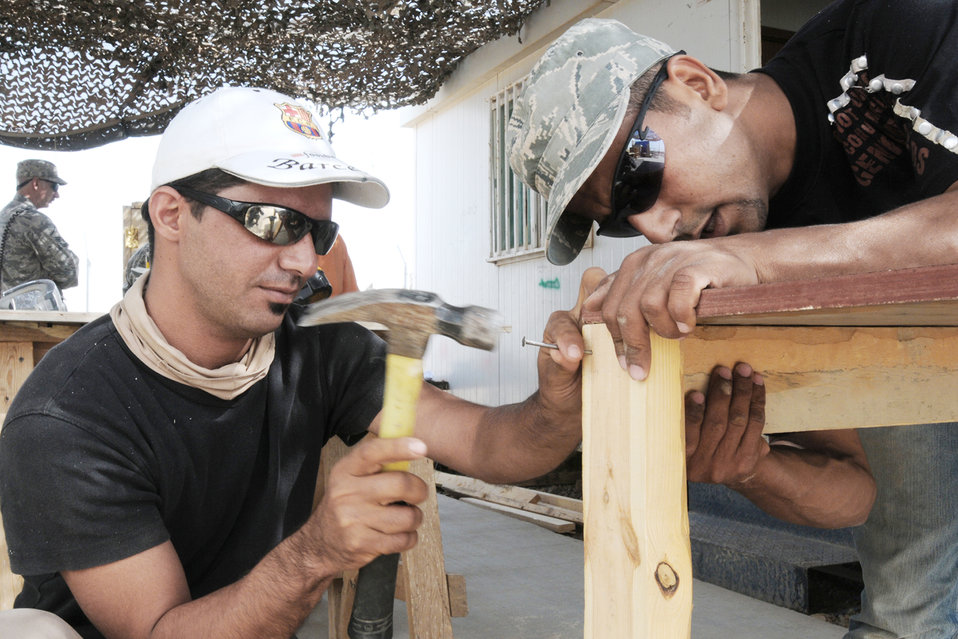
Airmen provide local Iraqis building skills

Iraqi workers Qusay Ahmad and Ahmad Hussein nail pieces of wood together to create a desk that will be used in a classroom for the Iraqi police counter explosive team Oct. 17, 2009, at Kirkuk Air Base, Iraq. Members of the 506th Expeditionary Civil Engineer Squadron works with local nationals who are employed by a local contractor on base to develop their skills which allow them to work and complete job orders.